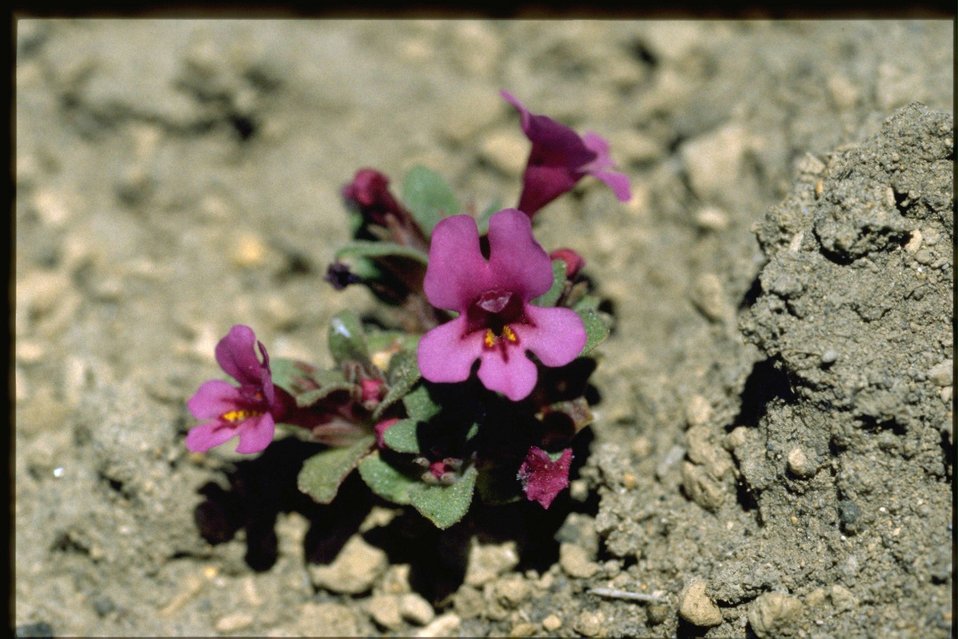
Medium shot of violet habitat.